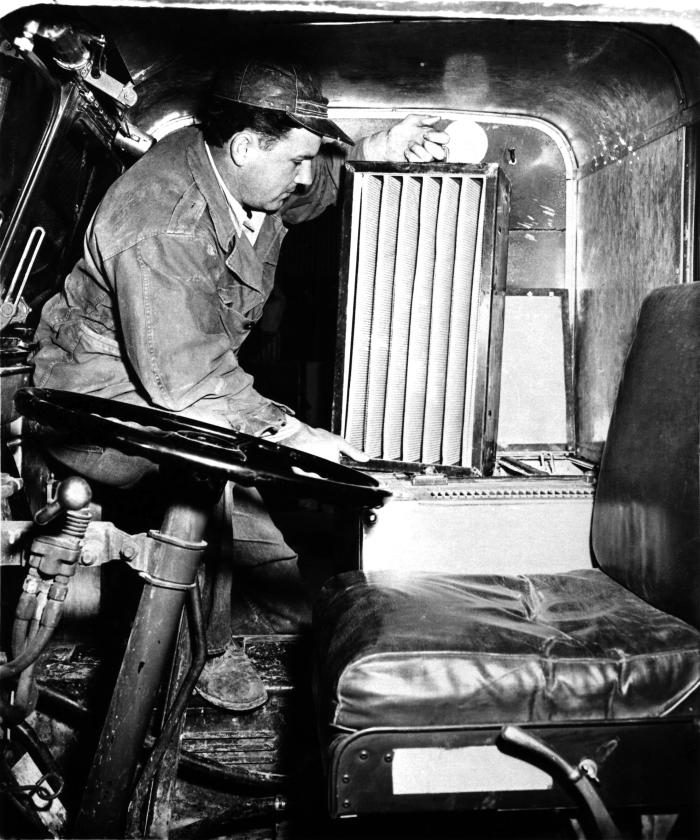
This 1958 historical photograph was provided by the Center for Disease Control's (CDC), National Institute for Occupational Safety and Health (NIOSH), and depicted a worker was demonstrating the replaceable filter cartridge for the ventilating unit inside an enclosed truck cab. The truck was one of a fleet located at a diatomaceous earth quarry plant in Lompoc, California. Such ventilation reduced a drivers' exposure to quarry dust, and the amount of dust brought home on his clothes. The image originally appeared in a U.S. Public Health Service Publication No. 601, in an article entitled,'Pneumoconiosis in Diatomite Mining and Processing', 1958. Inhaled dust or other airborne particulate materials containing silica that is deposited in the lungs, will cause the lung tissue to react by creating generalized nodular fibrotic changes, and is known as 'pneumoconiosis', which is also know an pneumosilicosis, or 'grinders' disease'.